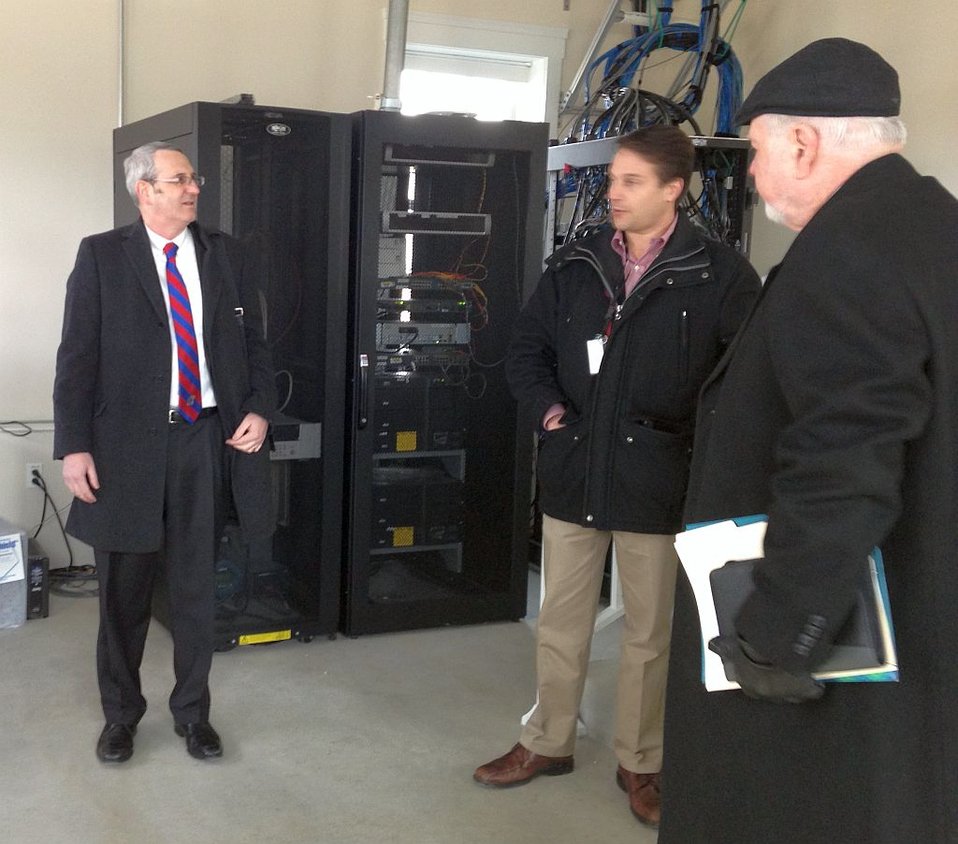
Kansas visits the NZERTF

Dr. Dave Yashar (Center) of the NIST Engineering Lab explains data collection activities at the NIST Net-Zero Energy Residential Test Facility (NZERTF) to Dr. Michael Branicky (Left), Dean of Engineering at the University of Kansas and Dr. Robert Honea (Right), Director of the University of Kansas Transportation Research Institute.